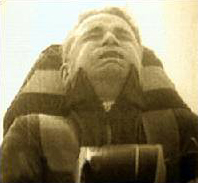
Colonel (Dr.) John Paul Stapp

1950's -- Dr. John Paul Stapp was not only the